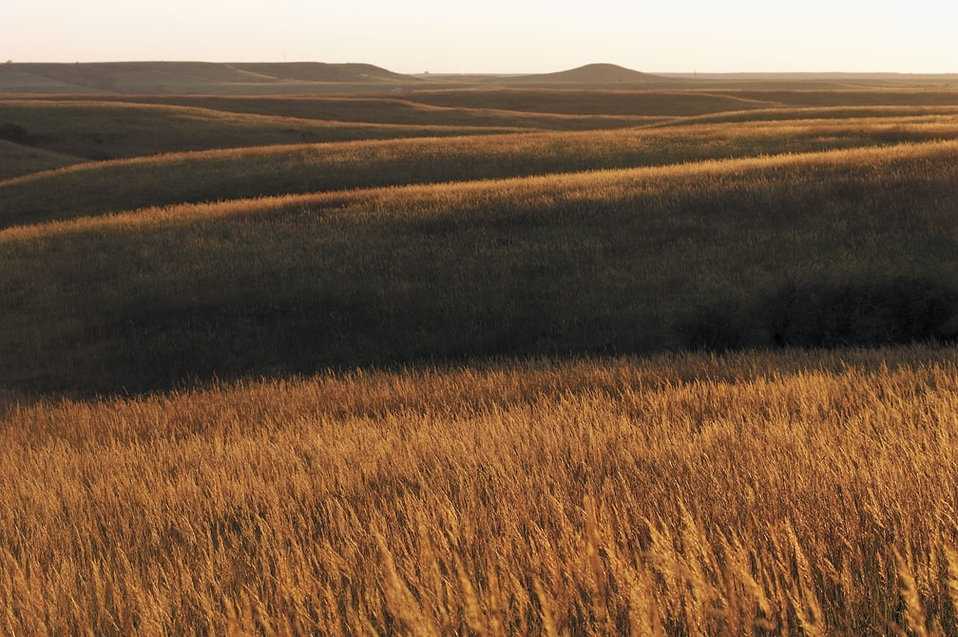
golden konza tallgrass prairie

Flint Hills National Wildlife Refuge, KS